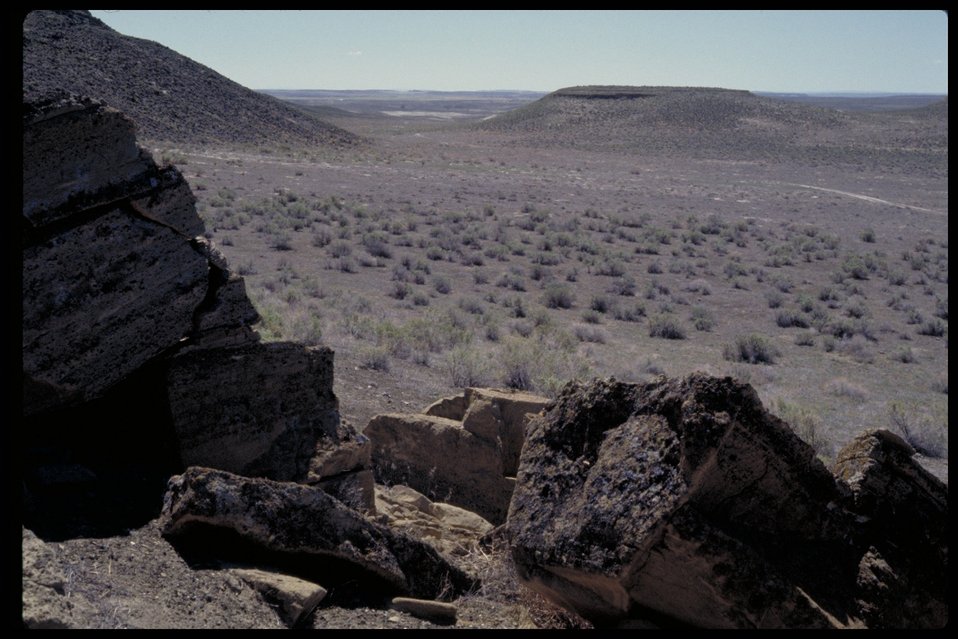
Oregon Trail near Wildhorse Butte Lower Snake River District